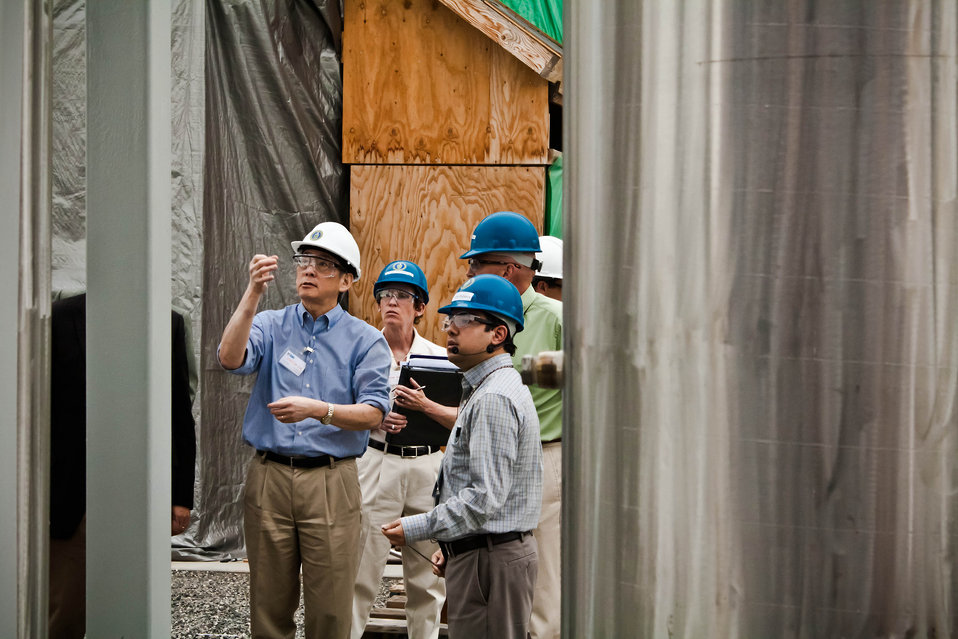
Secretary Steven Chu visits Hanford's Large Scale Integrated Test Facility.